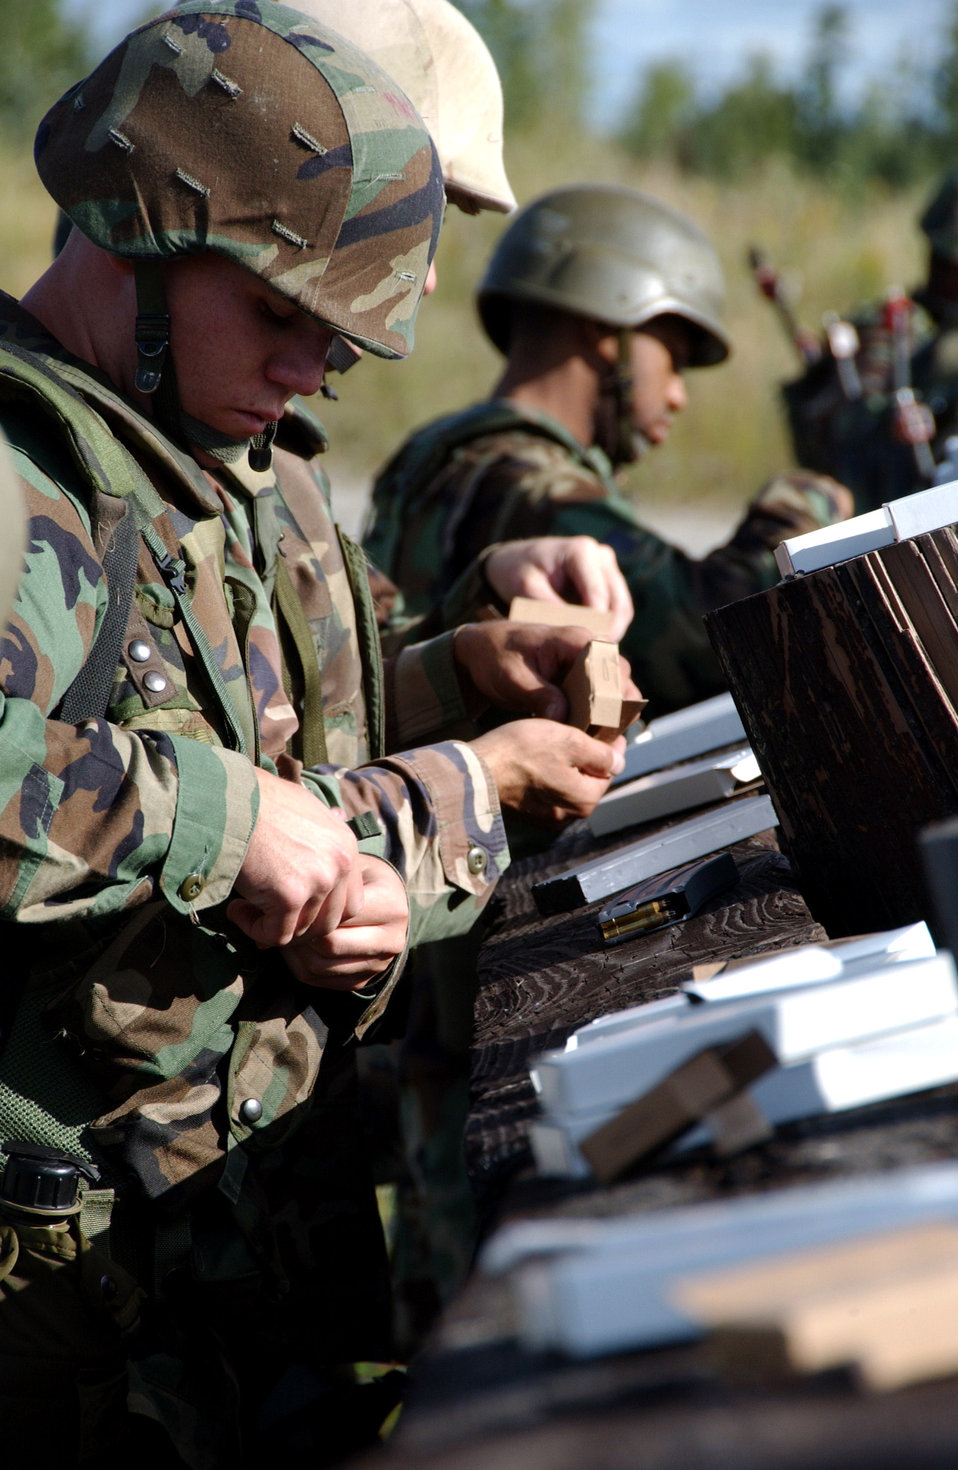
Air warriors train for deployment

An Airman loads his M-16 clips with blanks during an exercise in combat skills training Aug. 3 at Eielson Air Force Base, Alaska. This training gives Airmen the skills necessary to perform and adapt in a combat environment.